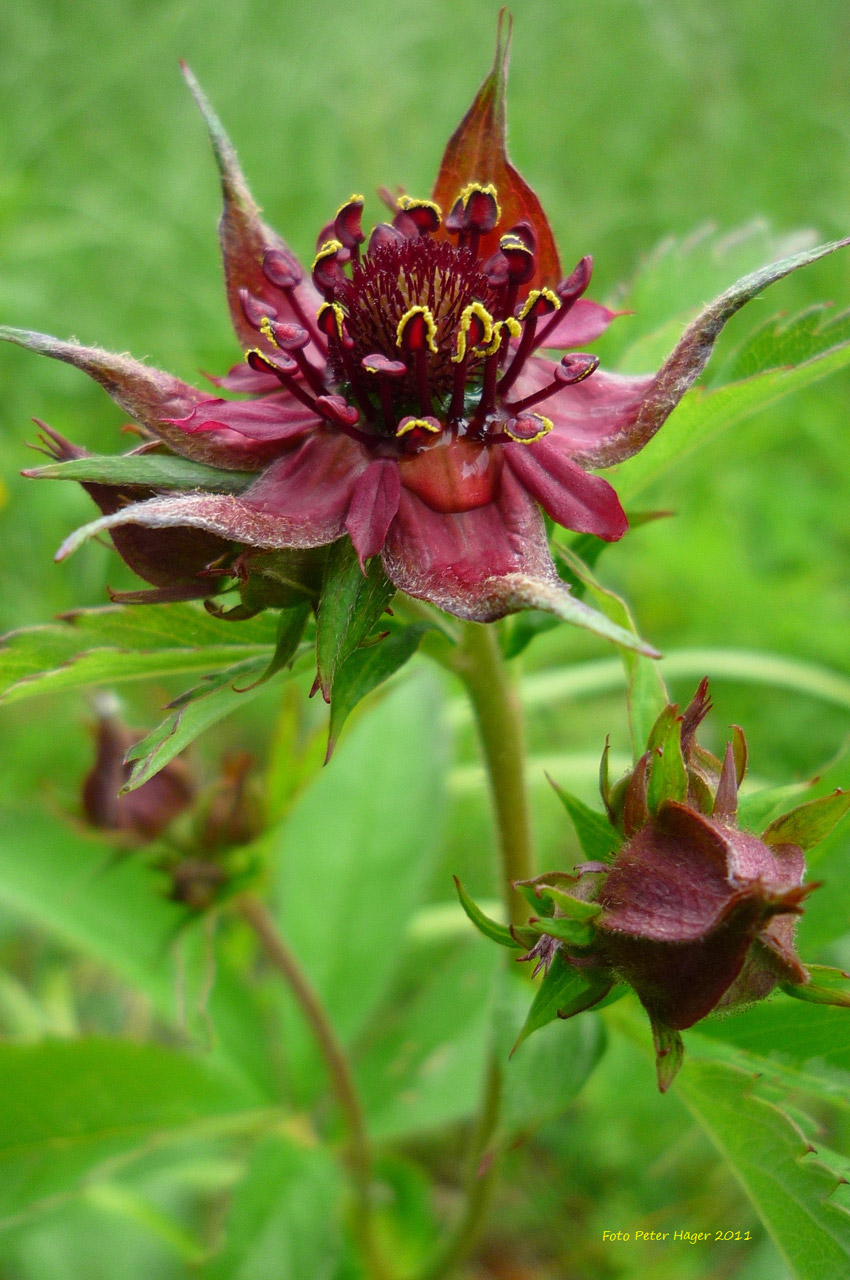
Cinquefoil

Marsh cinquefoil, comarum palustre.